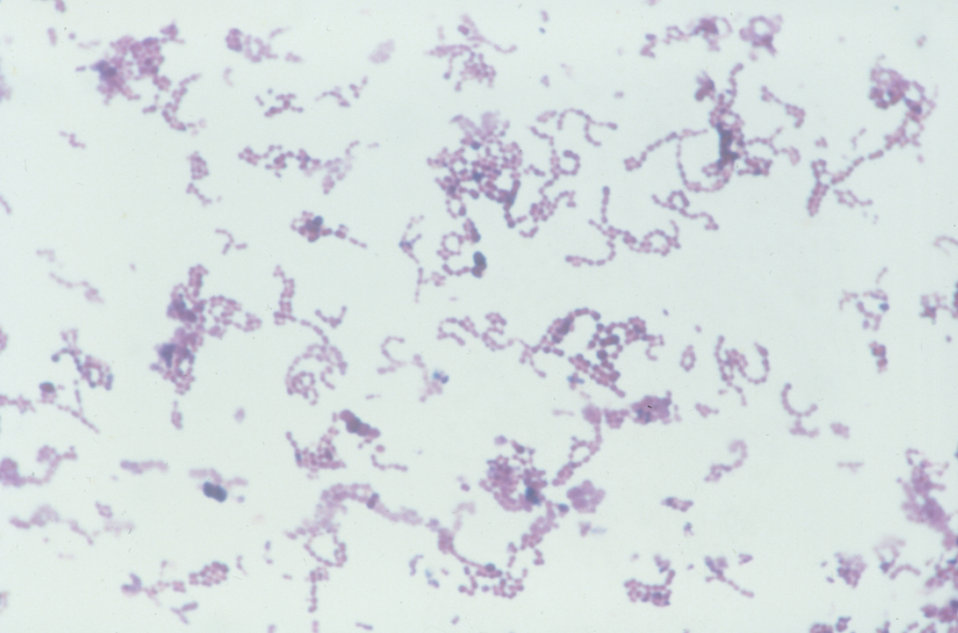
This photomicrograph shows Peptostreptococcus anaerobius on blood agar plate (BAP) using Gram's stain after 48 hours.